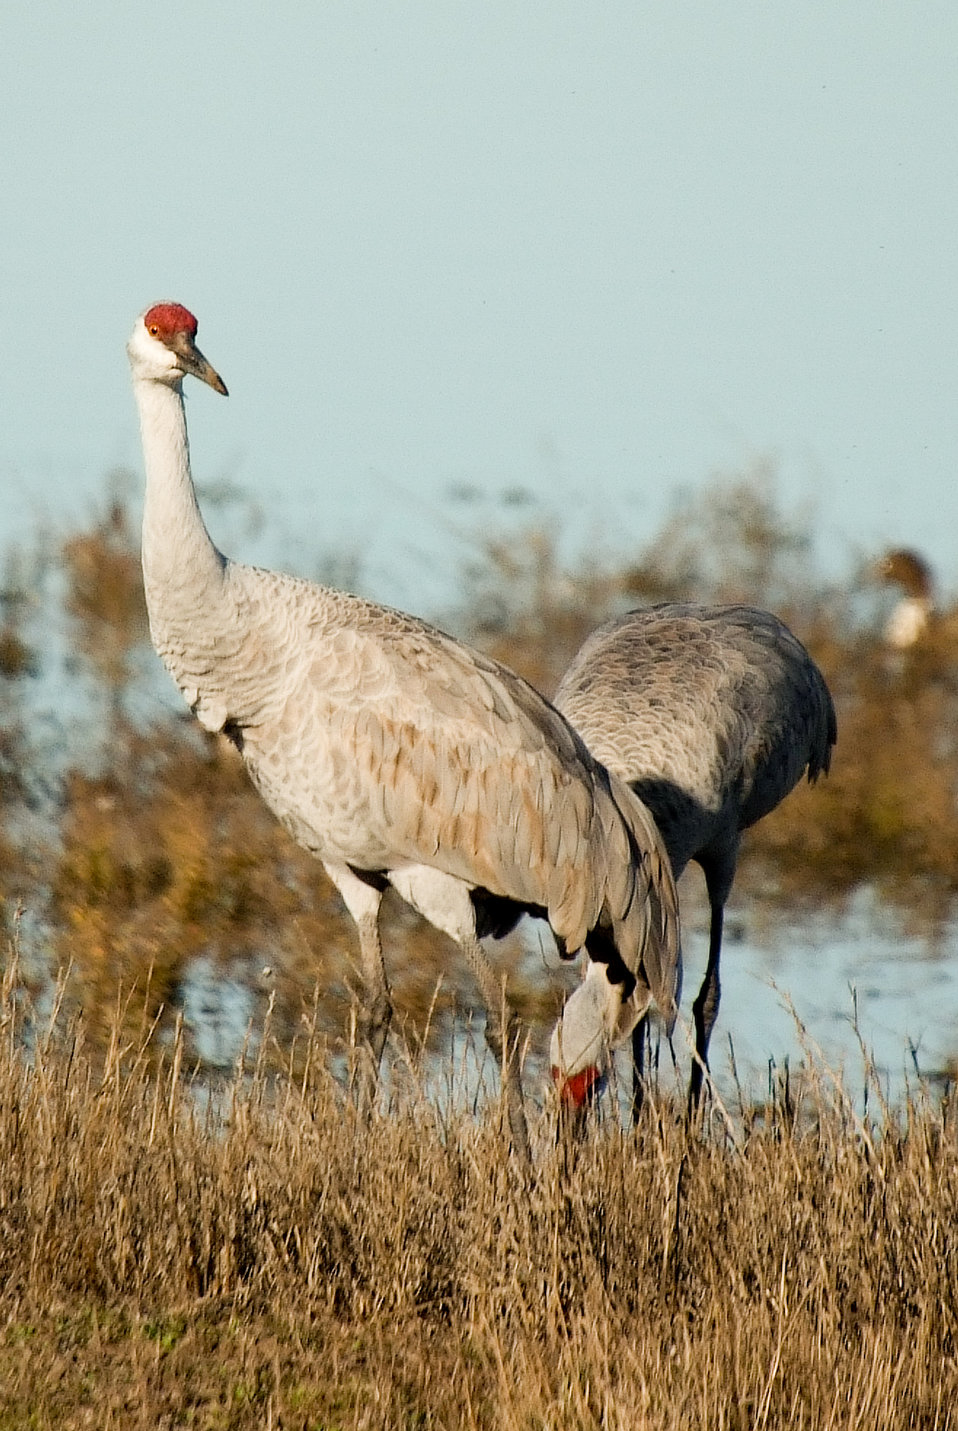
Sandhill cranes at Sacramento River National Wildlife Refuge, one of California's premier waterfowl refuges. Waterfowl are present from September through March. View hundreds of thousands of geese and ducks from November through January. Many other birds and mammals provide year-round viewing.